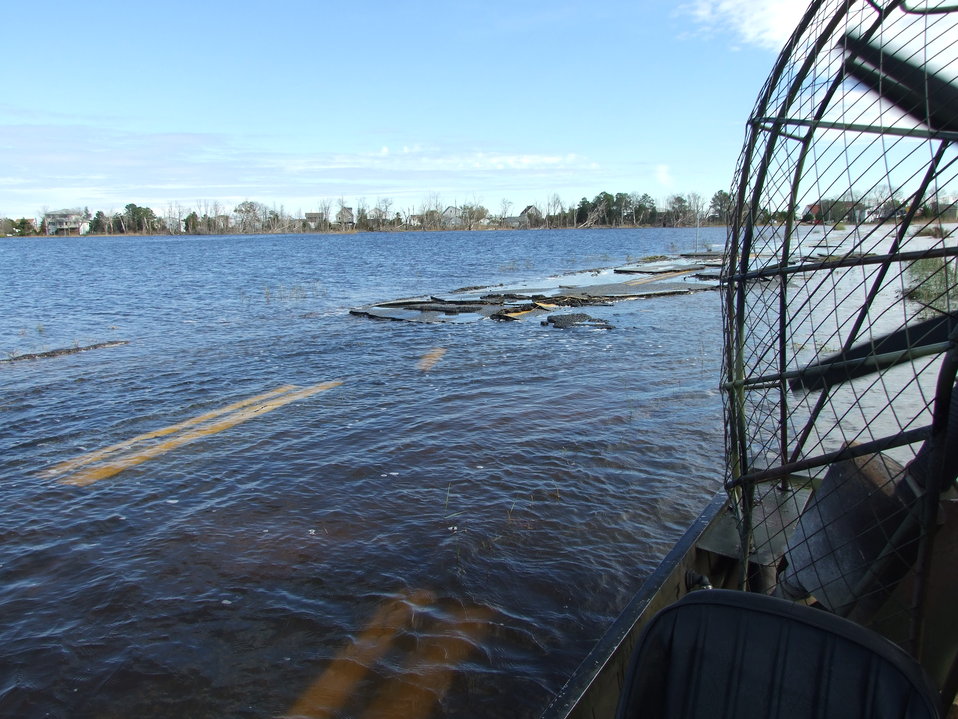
Flooding at Prime Hook National Wildlife Refuge (DE)

A flooded Prime Hook Beach road after Hurricane Sandy.